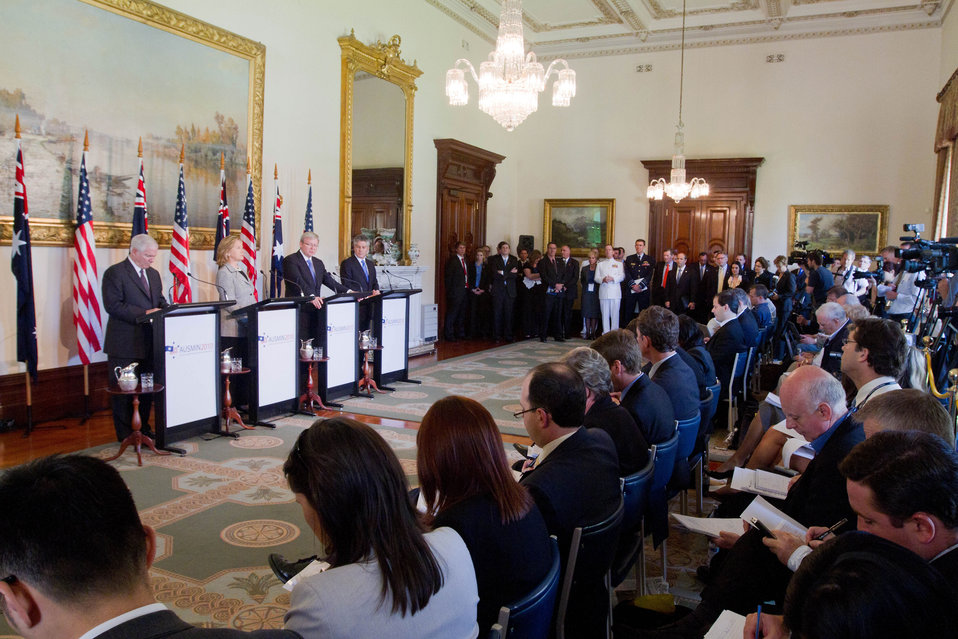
Secretary Gates, Secretary Clinton, Australian Foreign Affairs Minister Rudd, and Austrailan Defense Minister Smith Hold a Press Conference

U.S. Secretary of State Hillary Rodham Clinton, second from left, speaks as U.S. Secretary of Defense Robert Gates, left, Australian Foreign Affairs Minister Kevin Rudd, second from right, and Australian Defense Minister Stephen Smith listen during a press conference after the annual Australia-U.S. Ministerial Consultations (AUSMIN) at the Government House in Melbourne, Australia, on November 8, 2010.